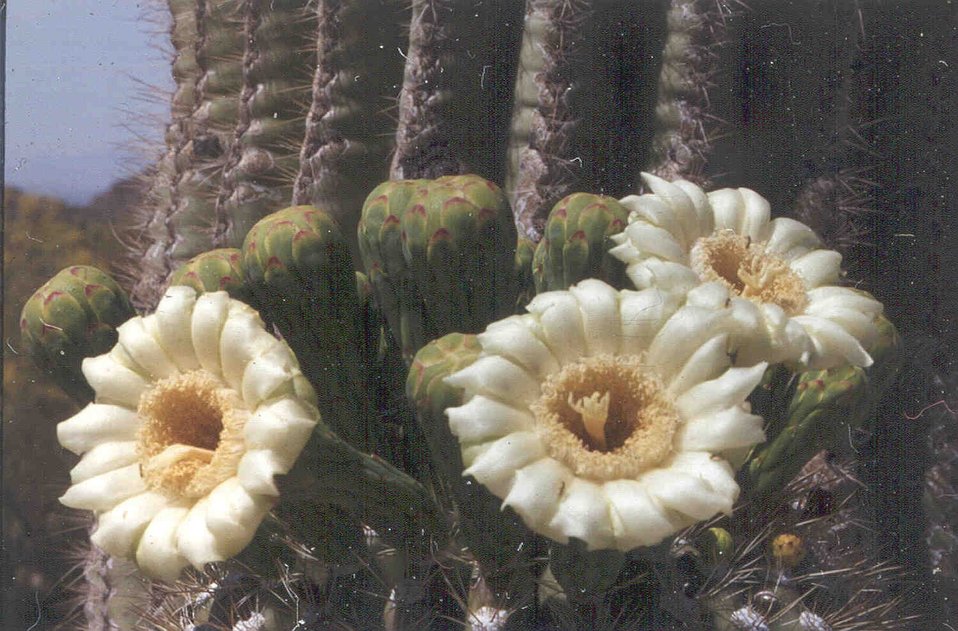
This is a beautiful saguaro cactus in bloom.